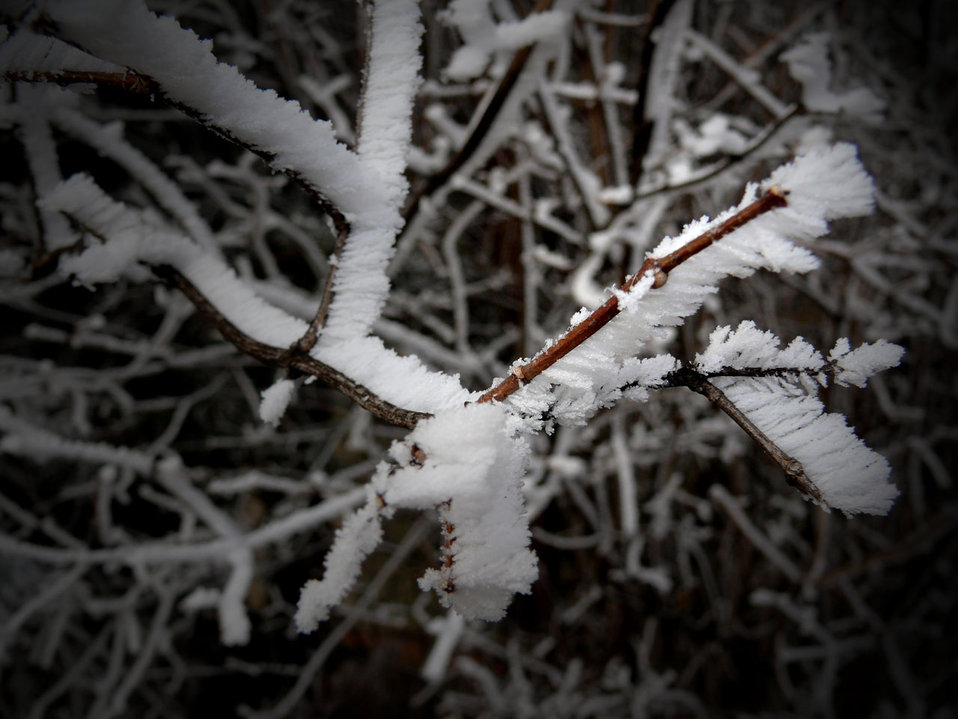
Winter time in slovakia.